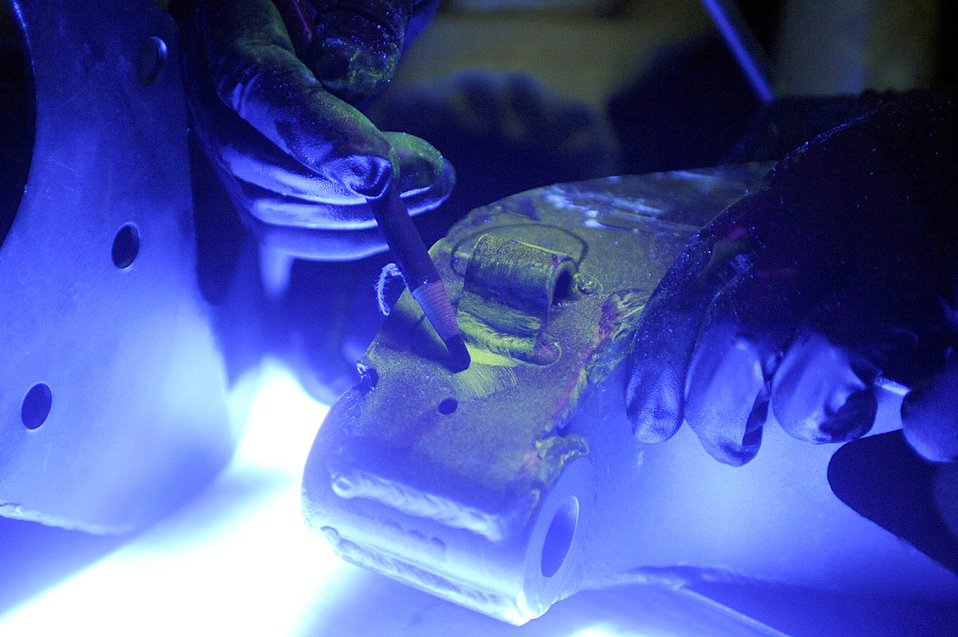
Ellsworth ultraviolet light inspection

Staff Sgt. Ehud Torres marks a cracked area May 20, 2010, at Ellsworth Air Force Base, S.D. Sergeant Torres is a non-destructive inspection technician with the 28th Maintenance Squadron.